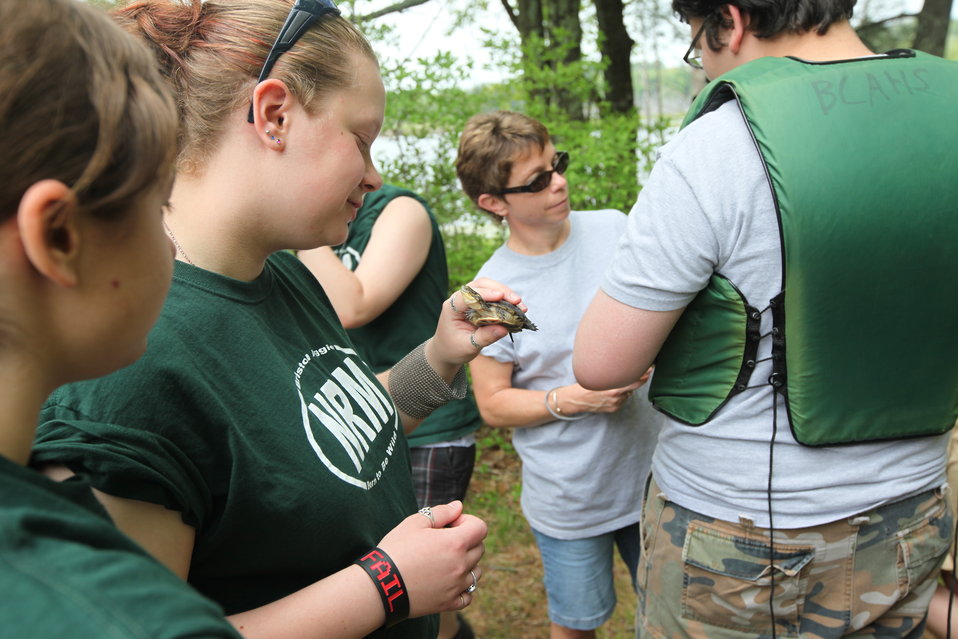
Kids Holding Turtle

Blanding's turtle release, Assabet River, MA.